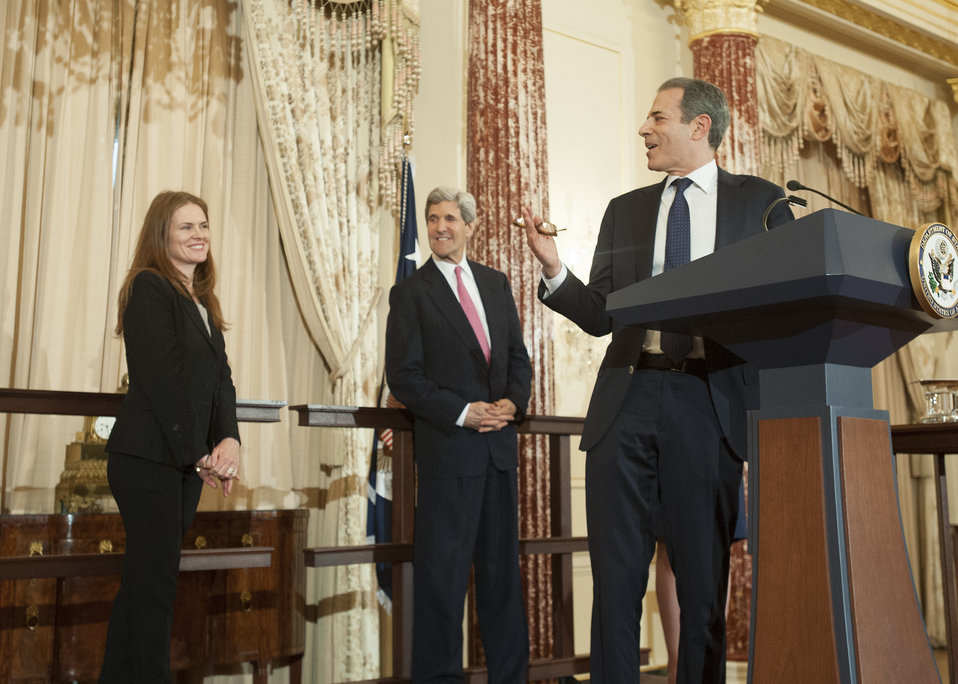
Under Secretary Stengel Delivers Remarks at his Swearing-in Ceremony

Looking back at his wife, Mary Pfaff, and U.S. Secretary of State John Kerry, Under Secretary for Public Diplomacy and Public Affairs Rick Stengel delivers remarks at his swearing-in ceremony at the U.S. Department of State in Washington, D.C., on April 15, 2014.